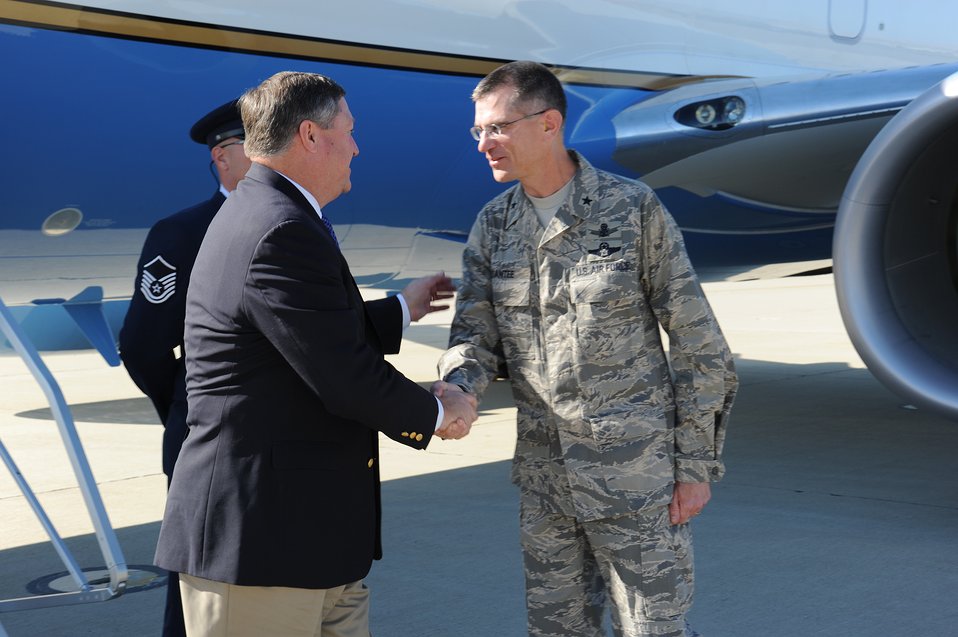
Secretary of the Air Force Visits Vandenberg Air Force Base

Secretary of the Air Force, the Honorable Michael B. Donley, is welcomed to Vandenberg Air Force Base, Calif., Nov. 22 by Brig. Gen. Jay Santee, 14th Air Force vice commander. The secretary visited Vandenberg to discuss future plans on how the teams at 14th Air Force and the Joint Space Operations Center there can continue to help combat Airmen in missions abroad here.